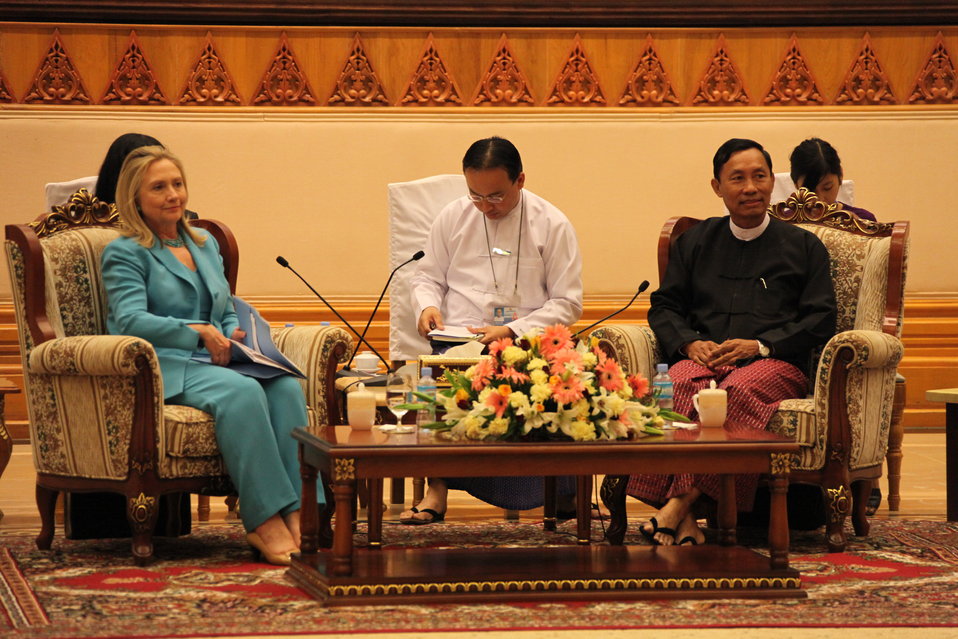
Secretary Clinton Meets With Speaker of the Lower House of Parliament U Shwe Mann

U.S. Secretary of State Hillary Rodham Clinton meets with with Speaker of the Lower House of Parliament U Shwe Mann at the Burmese Parliament in Nay Pyi Taw, Burma, on December 1, 2011.